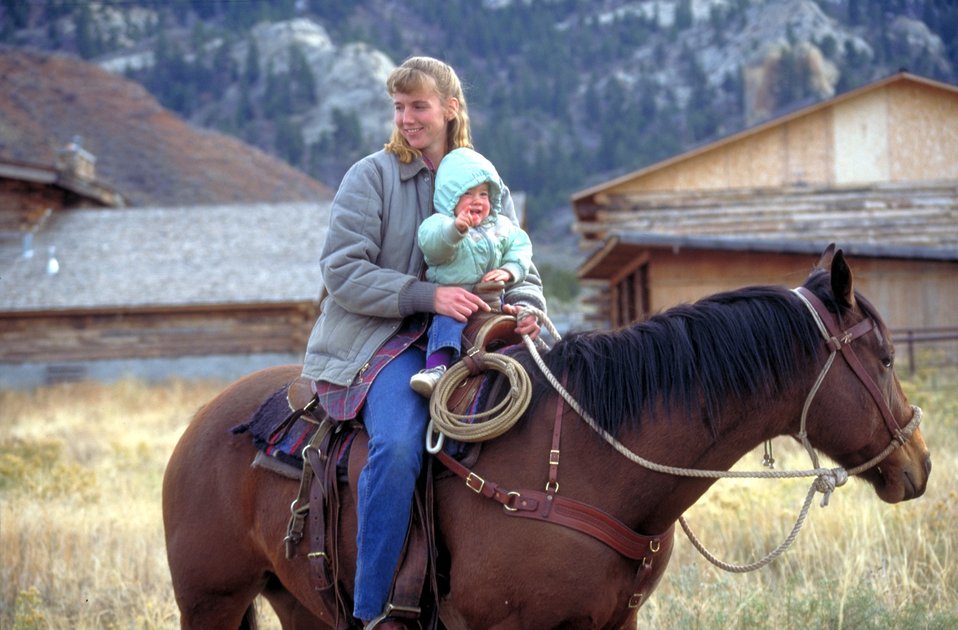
Working cowboys living near Vernal, Utah.